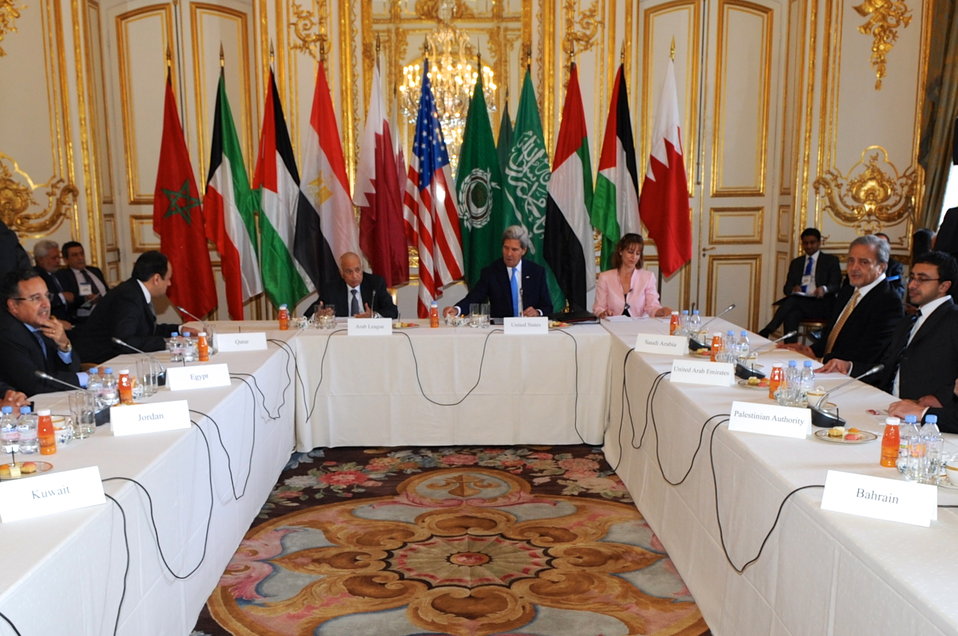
Secretary Kerry Meets With the Ministerial Delegation of the Arab Peace Initiative

U.S. Secretary of State John Kerry meets with the Ministerial Delegation of the Arab Peace Initiative in Paris, France on September 8, 2013.